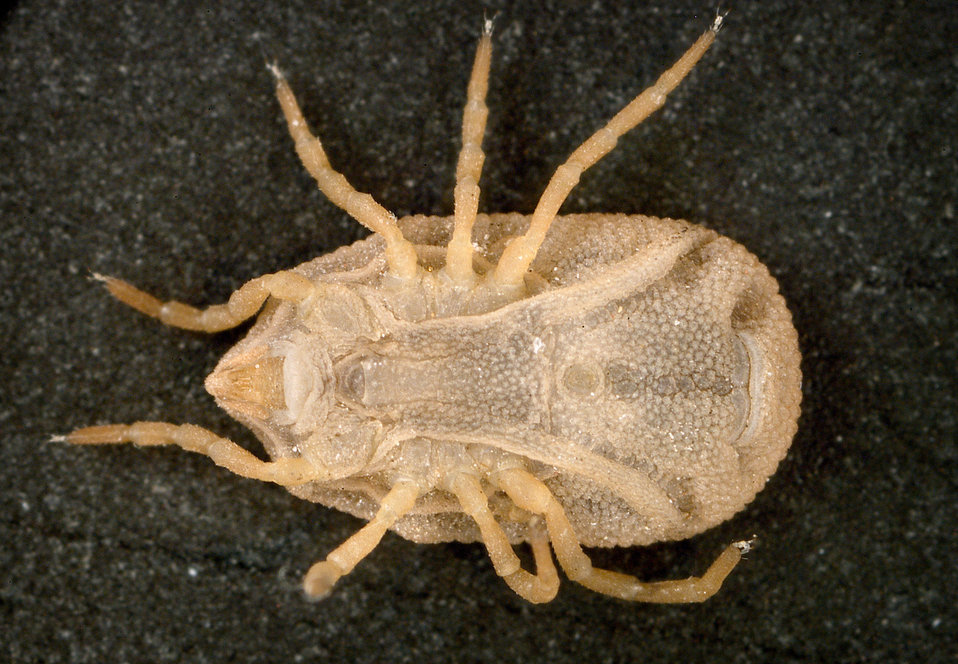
This is a ventral view of the 'soft tick' Carios kelleyi, formerly Ornithodoros kelleyi, or the 'Bat Tick'.